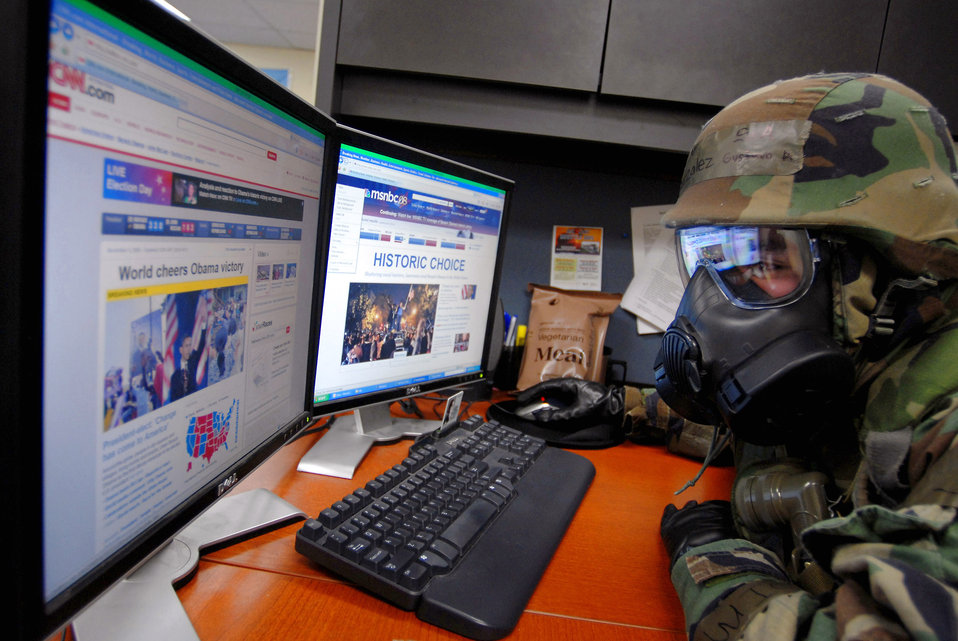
Keeping up with the news

Senior Airmen Gustavo Gonzalez checks the results of the U.S. presidential election Nov. 5 while wearing protective gear during an operational readiness exercise at Kunsan Air Base, South Korea.